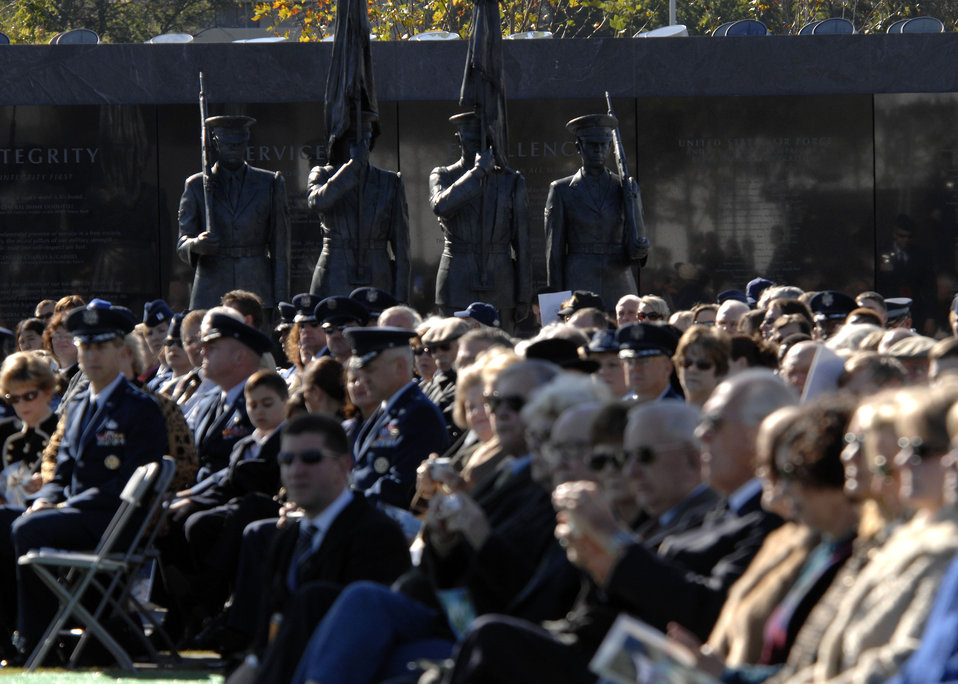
Wreath Ceremony

Hundreds sat around and neat the Honor Guard statue at the base of the new Air Force Memorial while Secretary of the Air Force Michael W. Wynne officially closed the Air Force Memorial commemoration with a wreath laying ceremony in Arlington, Va., Oct. 15, 2006. On behalf of all American citizens President George W. Bush accepted the Air Force Memorial from Air Force Memorial Foundation Chairman Ross Perot Jr. during the previous day's dedication ceremony at the base of the Air Force Memorial that overlooks the Pentagon. Designed by the late James Ingo Freed the memorial with its three soaring spires inspired by the U.S. Air Force Thunderbirds bomb burst manuever, pays tribute to and honors the patriotic men and women of the U.S. Air Force and its predeccessor organizations. An open house was held near the Pentagon in conjunction with the dedication ceremony which featured performances by the U.S. Air Force Band, the U.S. Air Force Honor Guard drill team, and culminated with a concert featuring country music performer LeeAnn Womack.